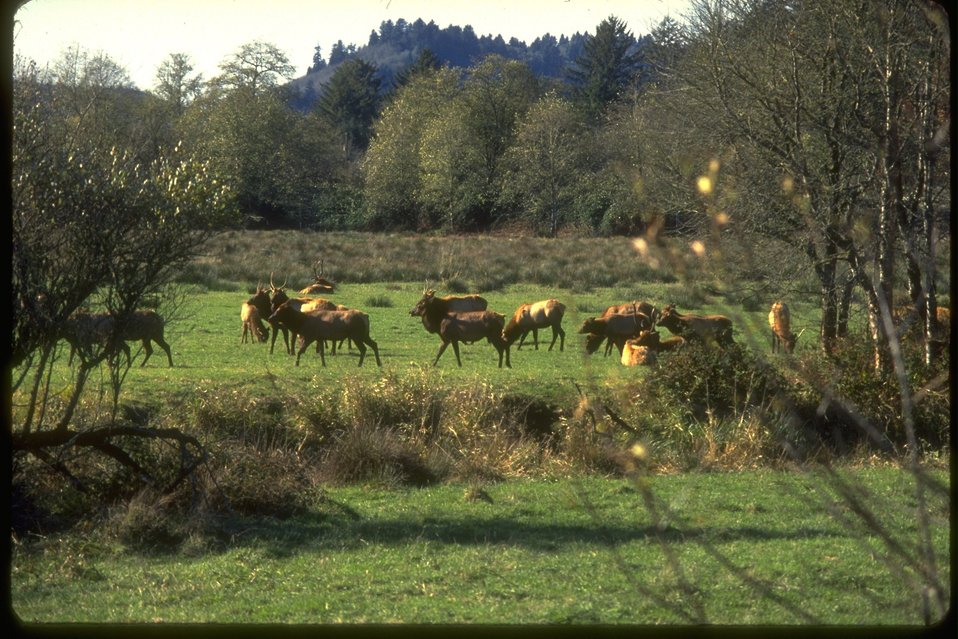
Roosevelt Elk.